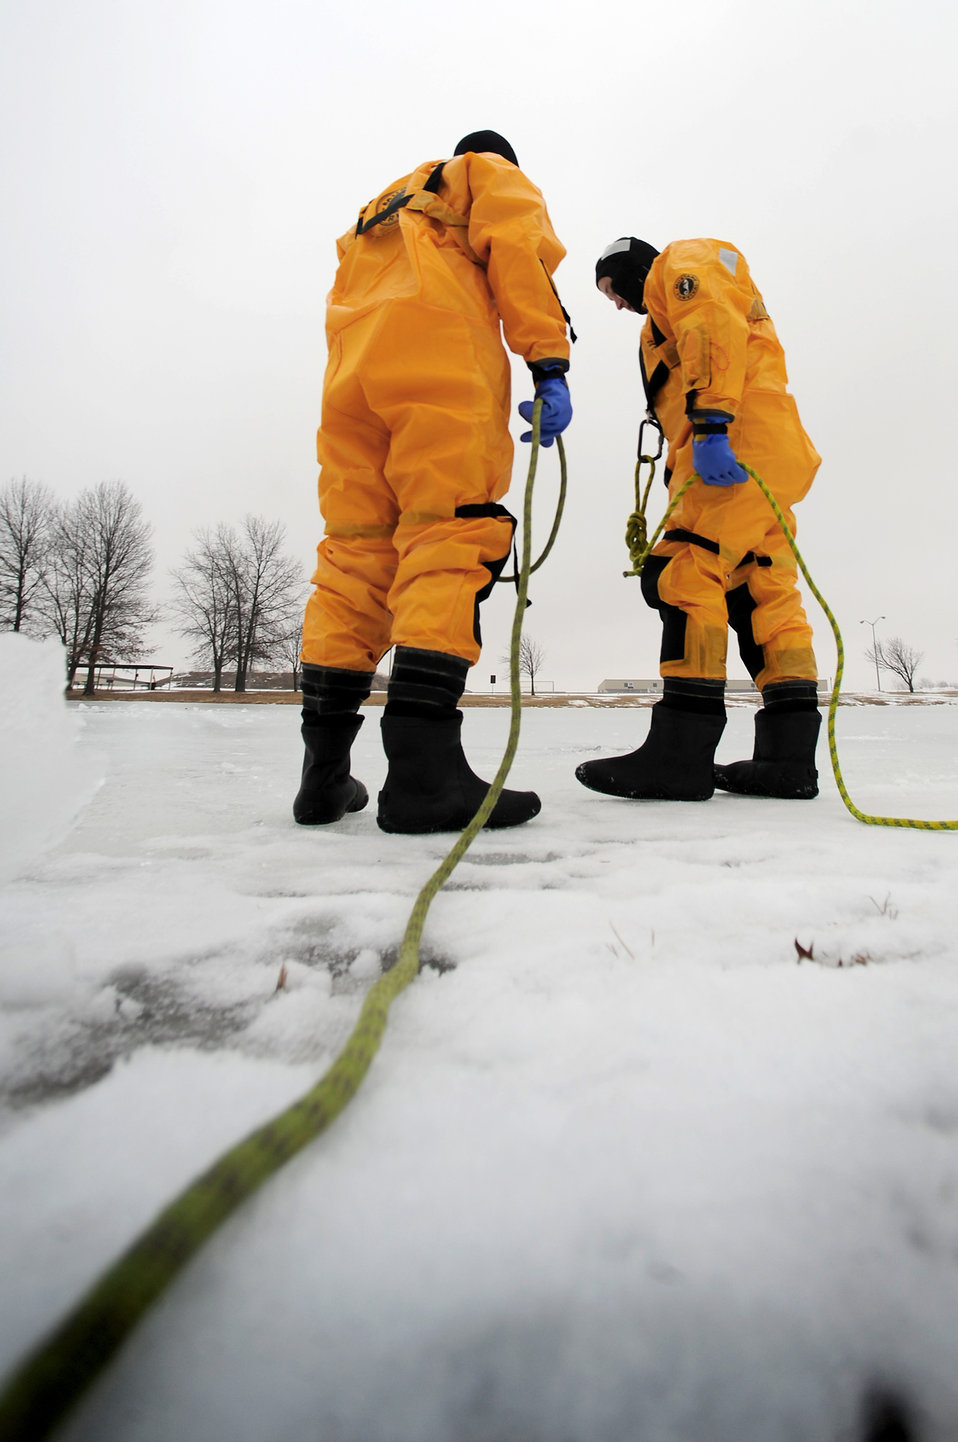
Ice rescue training

Two 509th Civil Engineer Squadron members prepare for ice rescue training Jan. 31, 2011, at Whiteman Air Force Base, Mo.